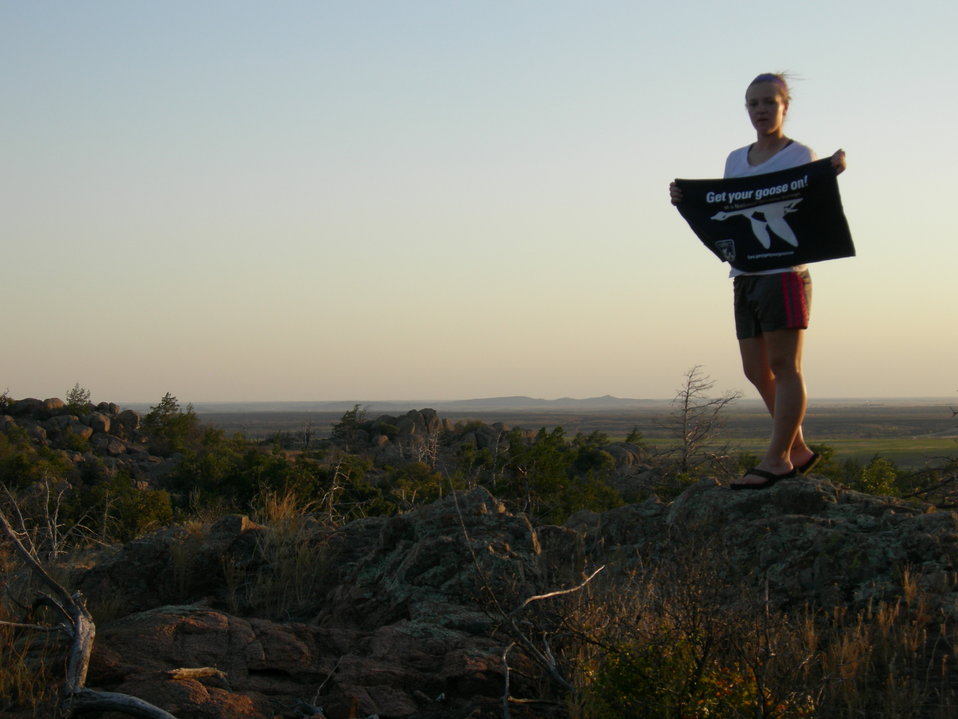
Get Your Goose On!

Wichita Mountains National Wildlife Refuge in Oklahoma.